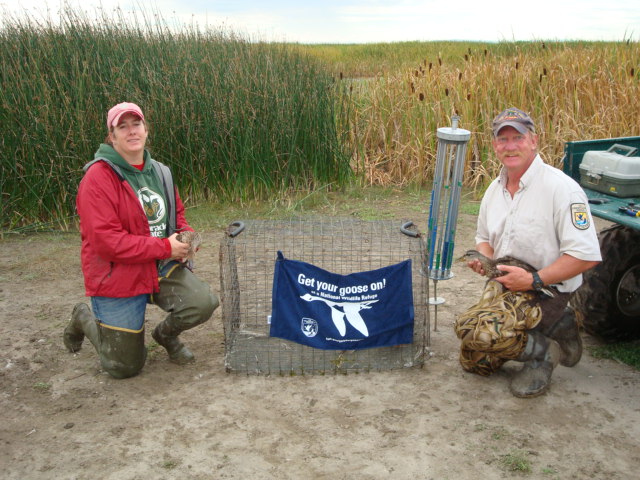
GYGO! - Duck Banding Style

Pictured: Scott Miller, biologist of the San Luis Valley NWR complex and Kammie Kruse, a biologist from the Central Flyway Office, as they band ducks at Monte Vista NWR in southern Colorado.